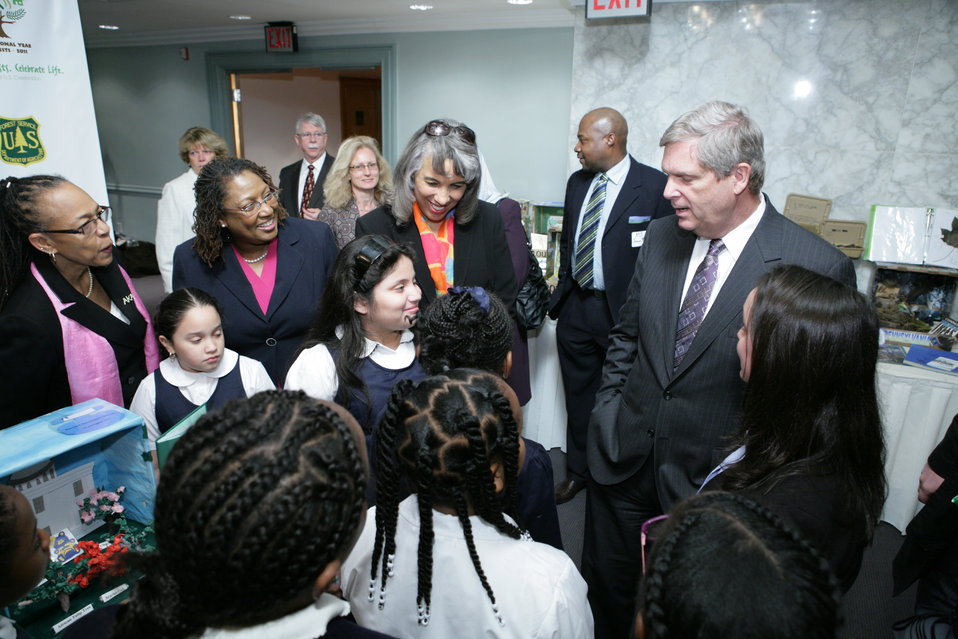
USDA Sec. Vilsack-Barnard Elementary9-casual shot

USDA Secretary Tom Vilsack speaks with elementary school students from Barnard Elementary in Northwest Washington D.C. about their participation in Project Learning Tree, a partnership conservation education program with the American Forest Foundation and the U.S. Forest Service